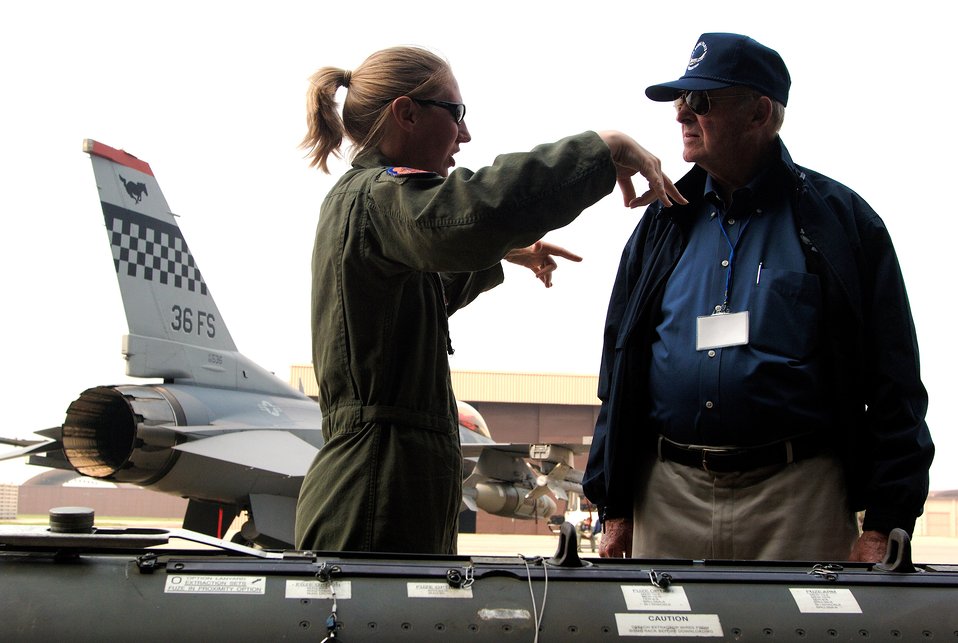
Pilots of yesteryear interact with Airmen of today

Capt. Katie Gateke briefs Robert Moxley about guided bomb unit-24/27 munition during a Sept. 11 tour of Osan Air Base, South Korea. Mr. Moxley is a visiting Korean War veteran. Korean War veterans are visiting South Korea during a week-long tour in observance of the the Air Force's 60th Anniversary. Captain Gateke is assigned to the 36th Fighter Squadron at Osan AB.